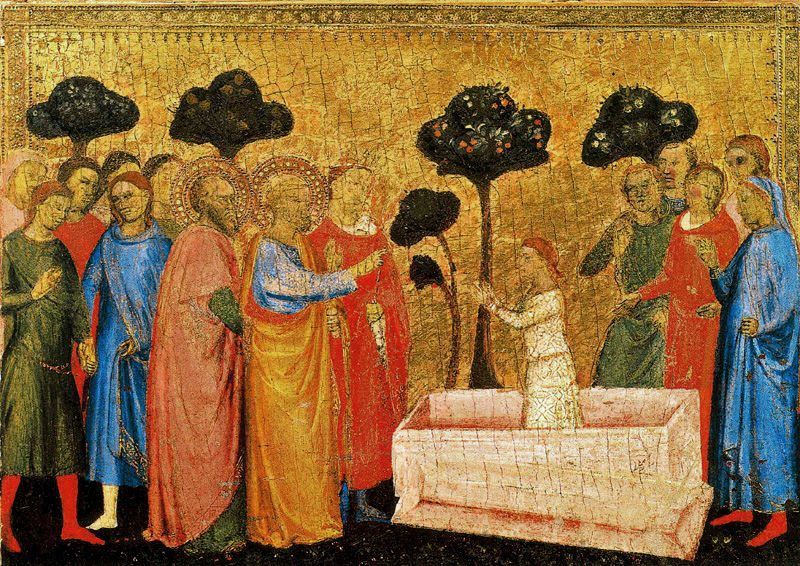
16 Jacopo di Cione Polyptych San Pier Maggiore, detail of predella. 1370-71 Pinacoteca Vaticana